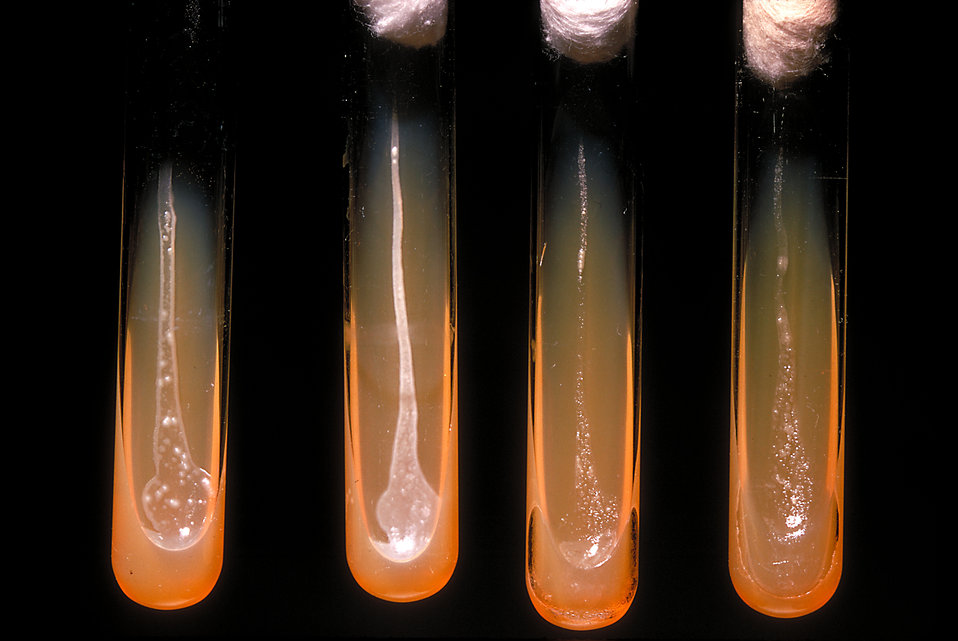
These slant cultures growing Actinomyces viscosus, reveal the oxygen requirements of this bacterium; strain W828.